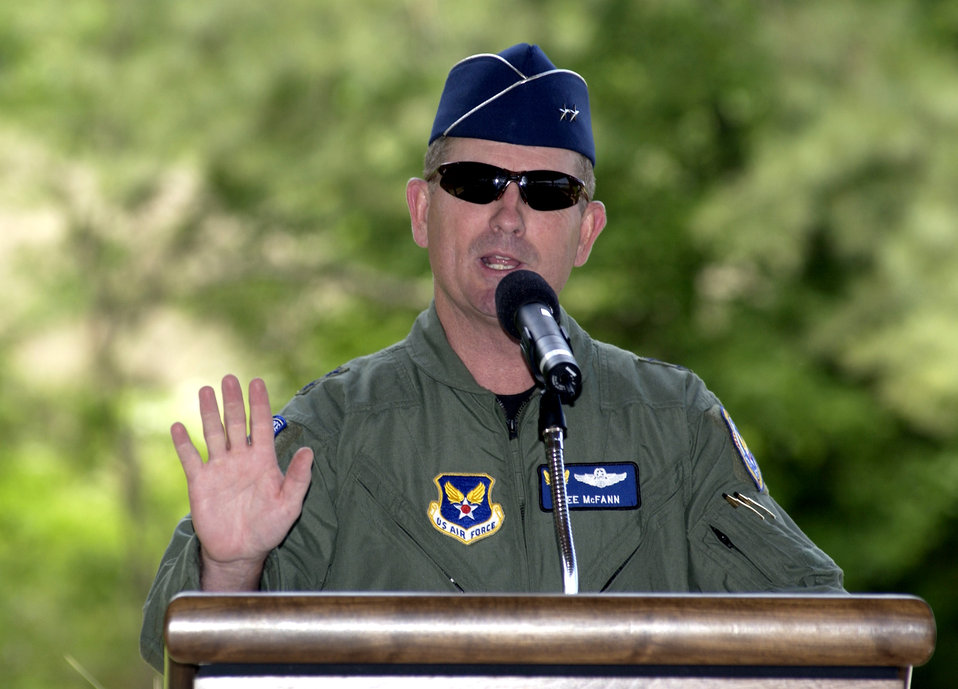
Motorcycle safety forum held at Andrews

ANDREWS AIR FORCE BASE, Md. -- Maj. Gen. Maurice L. "Lee" McFann Jr. welcomes people to a motorcycle safety forum here May 28. Issues discussed included how Air Force leaders can have a significant role in promoting motorcycle safety by encouraging the creation of base motorcycle clubs and tapping into civilian motorcycle safety programs. General McFann is the Air Force safety chief.